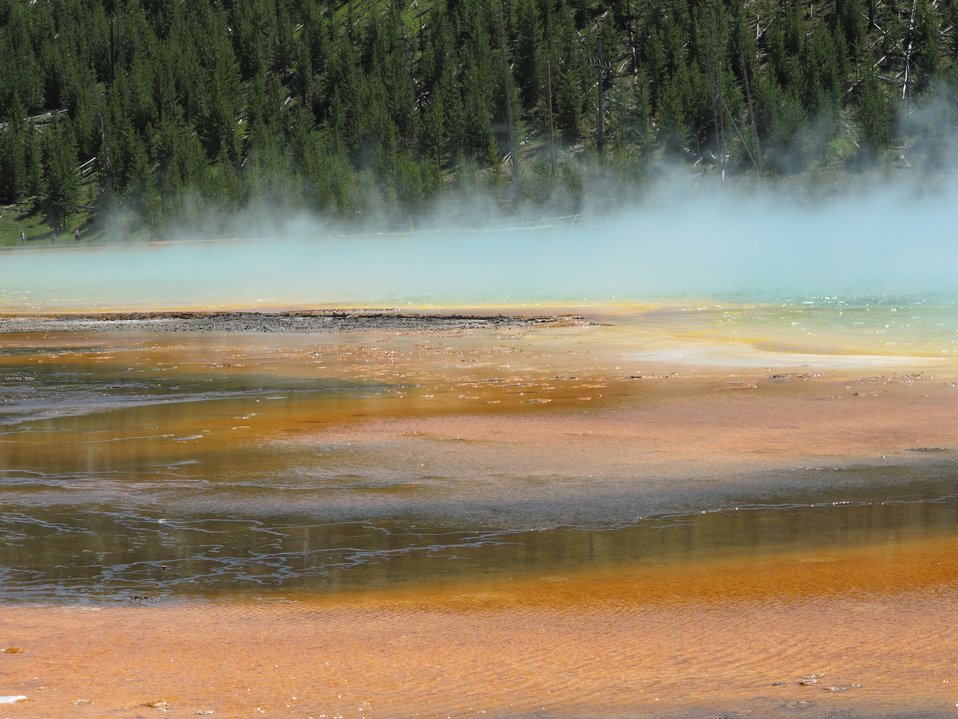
Grand Prismatic Spring in the Midway Geyser Basin. This spring is the third largest hydrothermal spring in the world, approximately 250 X 300 feet in size and about 160 feet deep. The water temperature is 160 F (70 C). The colors on the edges of the spring are due to thermophile microbial mats that grow in the mineral-rich waters.